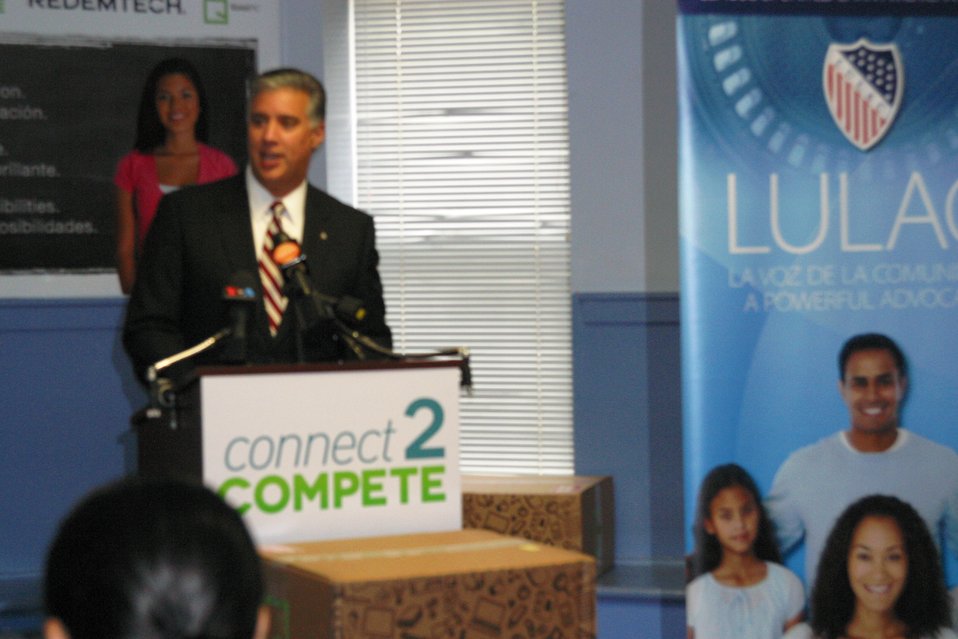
Connect 2 Compete: LULAC 8.7.12

Darryl Morin, State Director, LULAC speaking at the League of United Latin American Citizens (LULAC), and the Latin American Youth Center (LAYC) to announce the launch of a nationwide computer recycling and donation effort to support C2C’s efforts to close the digital divide.